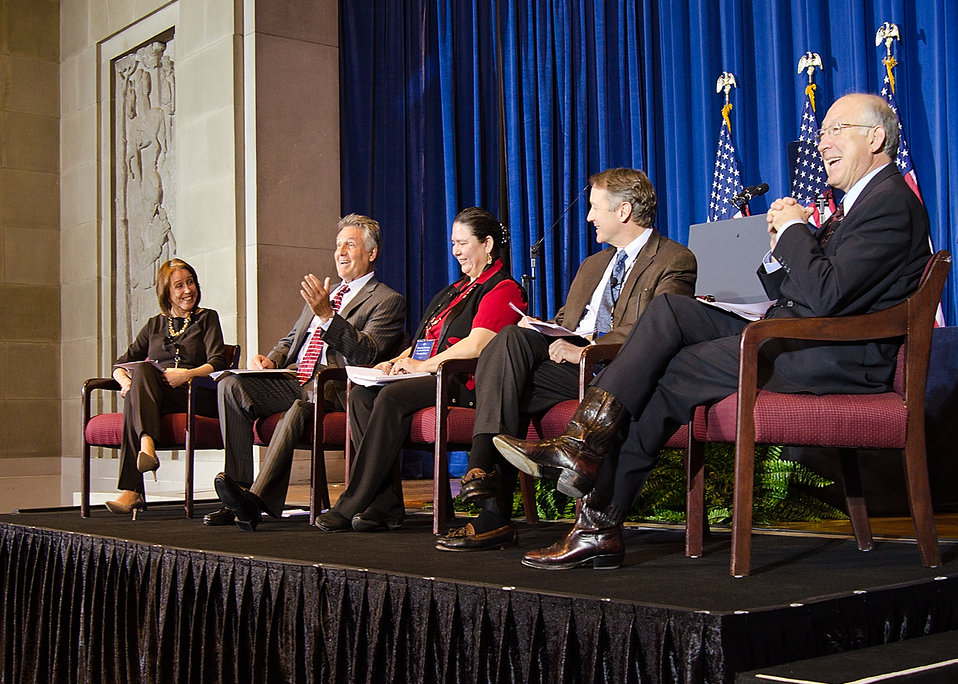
From left: U.S. Corps of Engineers Assistant Secretary for Civil Works Joan Darcy, Disabled Sports USA, Wounded Warrior Program representative Kirk Bauer, Tribal Chairwoman from the Lower Elwha Klallam Tribe in Washington State Frances Charles, The Orvis Company Vice Chairman of Retail and Sporting Traditions Dave Perkins, and Interior Secretary Ken Salazar participated in the, “Restoring Rivers: Building Resilience for People and Wildlife” panel during the White House Conservation conference, “Growing America’s Outdoor Heritage and Economy” at the Interior Department, Yates Auditorium in Washington, D.C., on Friday, March 2, 2012. The conference was part of President Barrack Obama’s, “America’s Great Outdoors Initiative” to spotlight community-driven conservation efforts and discussed how to build their success.